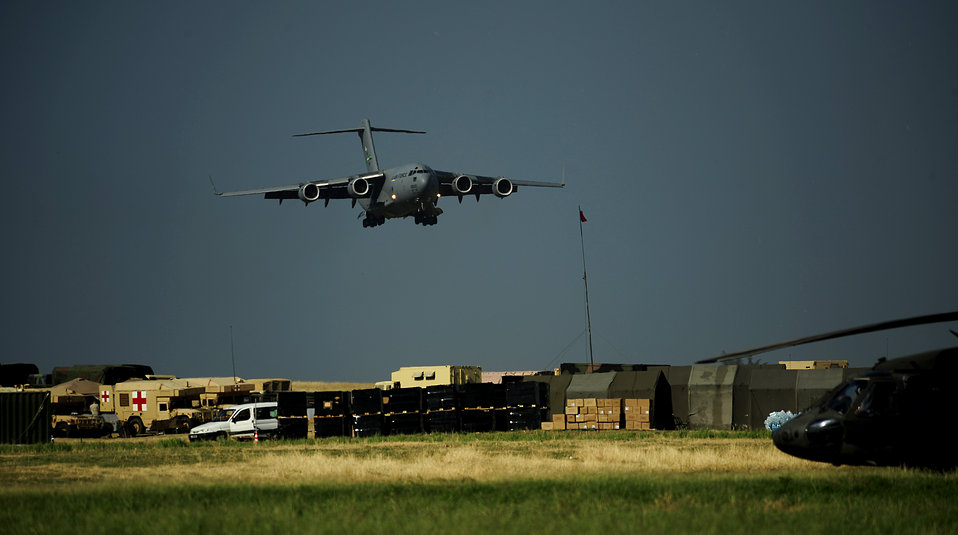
Unified Relief

A C-17 Globemaster III from McChord Air Force Base, Wash., lands at the Toussaint L'Ouverture International Airport Jan. 24, 2010, in Port-au-Prince, Haiti. Department of Defense and U.S. Agency for International Development officials are conducting relief efforts in the area following a 7.0-magnitude earthquake that struck the region Jan. 12, 2010.